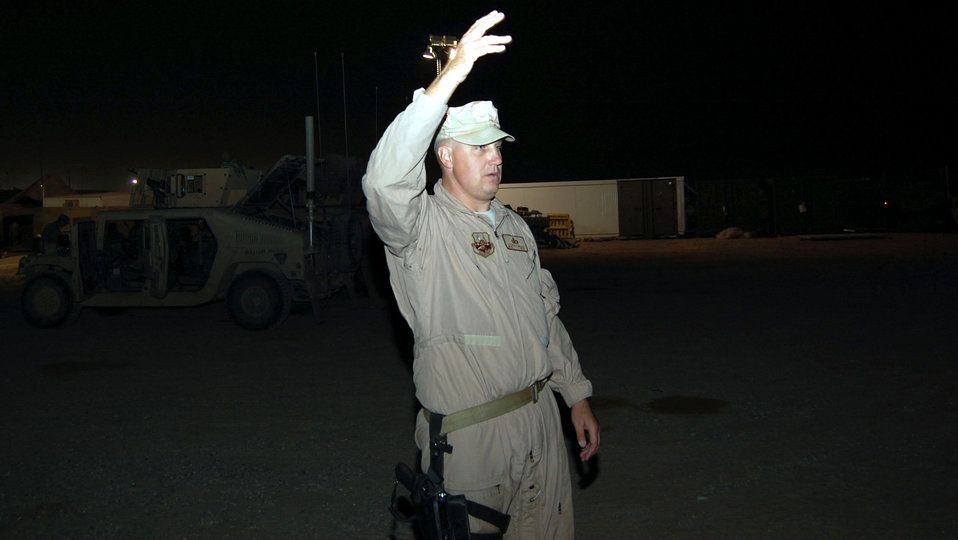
Convoy preparations

Master Sgt. Steven Miller gives the signal to move a convoy out Nov. 12 at Camp Bucca, Iraq. Sergeant Miller, an 887th Expeditionary Security Forces convoy commander, is from Moody Air Force Base, Ga.